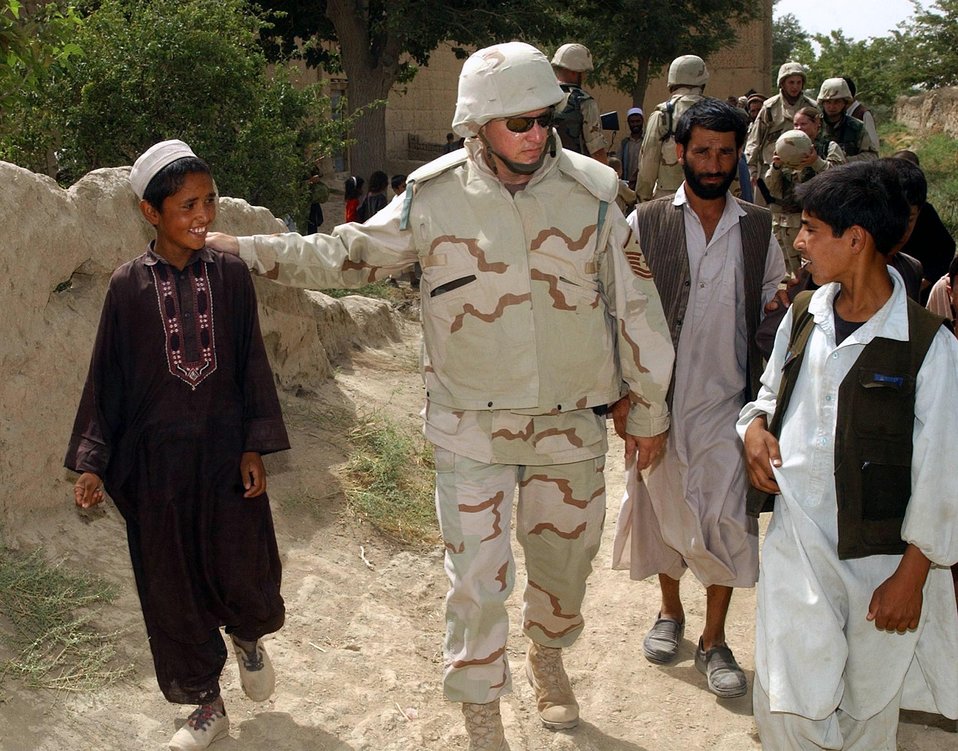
Winning hearts and friends

JAMADAAR, Afghanistan -- Children here walk with Master Sgt. Russ Hastings from the 455th Expeditionary Operations Group on Aug. 3. People from the group visited the village to show peace by offering gifts and supplies.